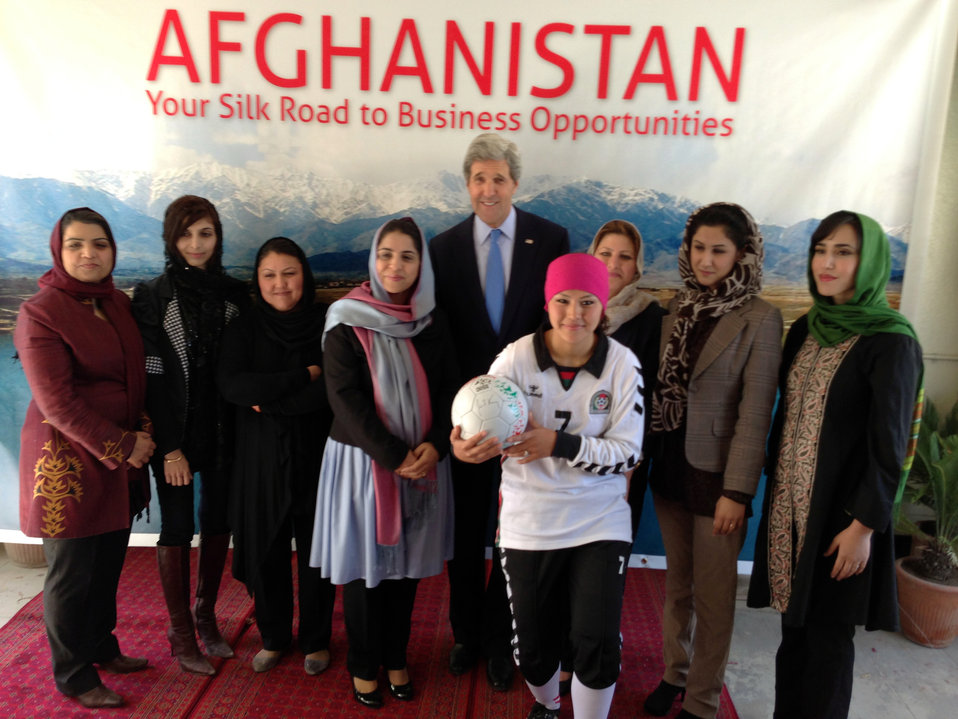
Secretary Kerry Tours Women’s Entrepreneurship Showcase in Kabul

U.S. Secretary of State John Kerry poses for a group photo during a tour of local businesses in Kabul, Afghanistan on March 26, 2013.